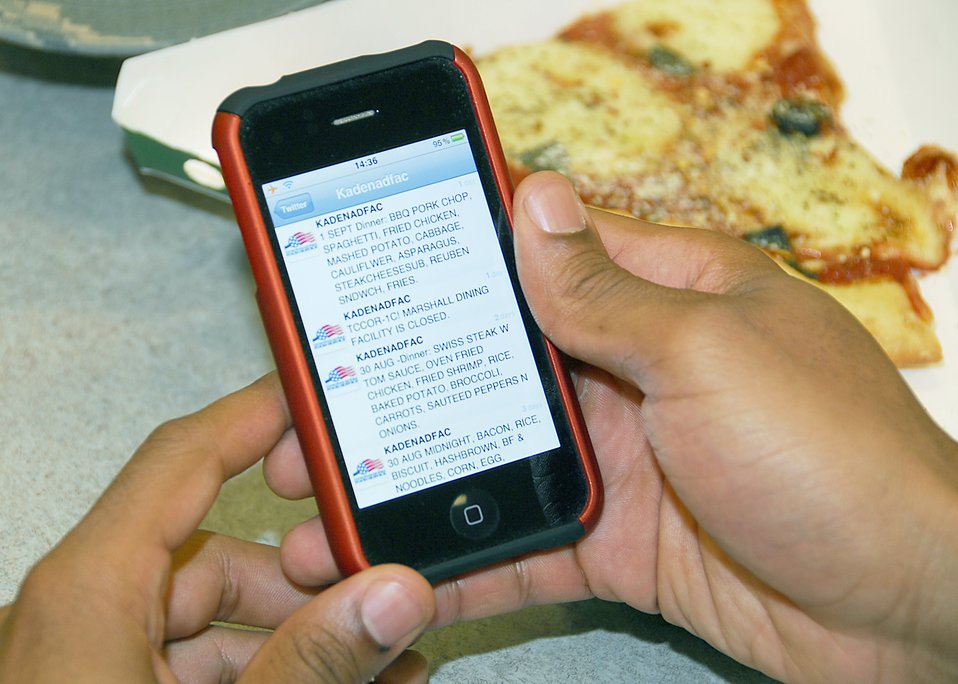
Kadena DFAC staff gives menu 'heads up' on Twitter

Senior Airman Tyrell A. Harris views the Marshall Dining Facility Twitter page on a cellular phone Sept. 2, 2010. Airman Harris is an 18th Equipment Maintenance Squadron armament technician.